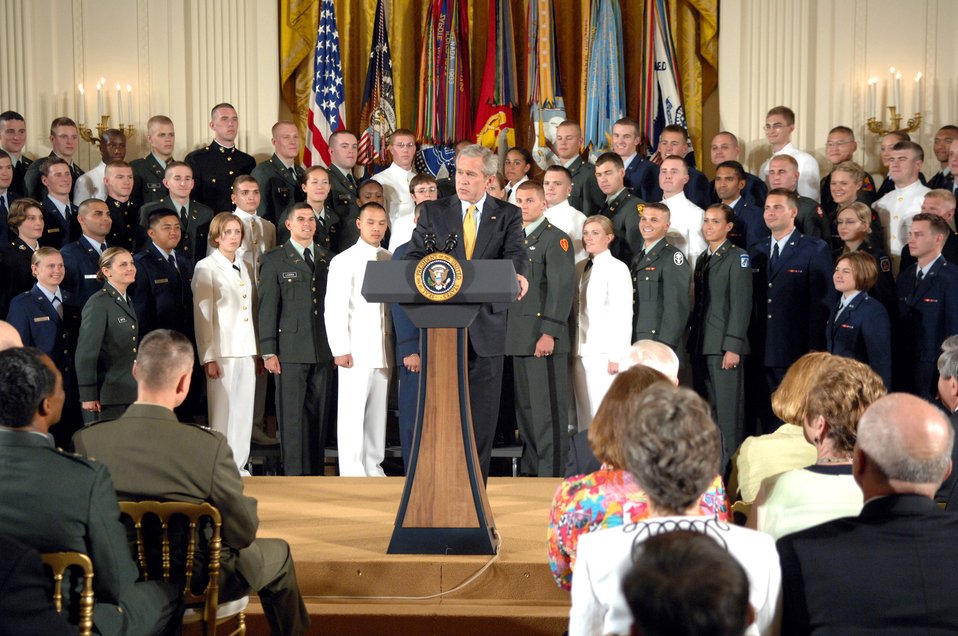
SECDEF administers 1st commissioning oath to ROTC cadets

President George W. Bush addresses the audience during the first joint ROTC commissioning ceremony May 17at the White House in Washington, D.C. Sixteen Air Force cadets from various universities were among the 55 cadets commissioned by Defense Secretary Robert M. Gates.